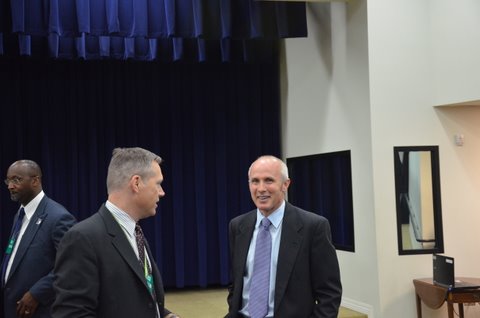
WH 2012 World Hepatitis Day Event